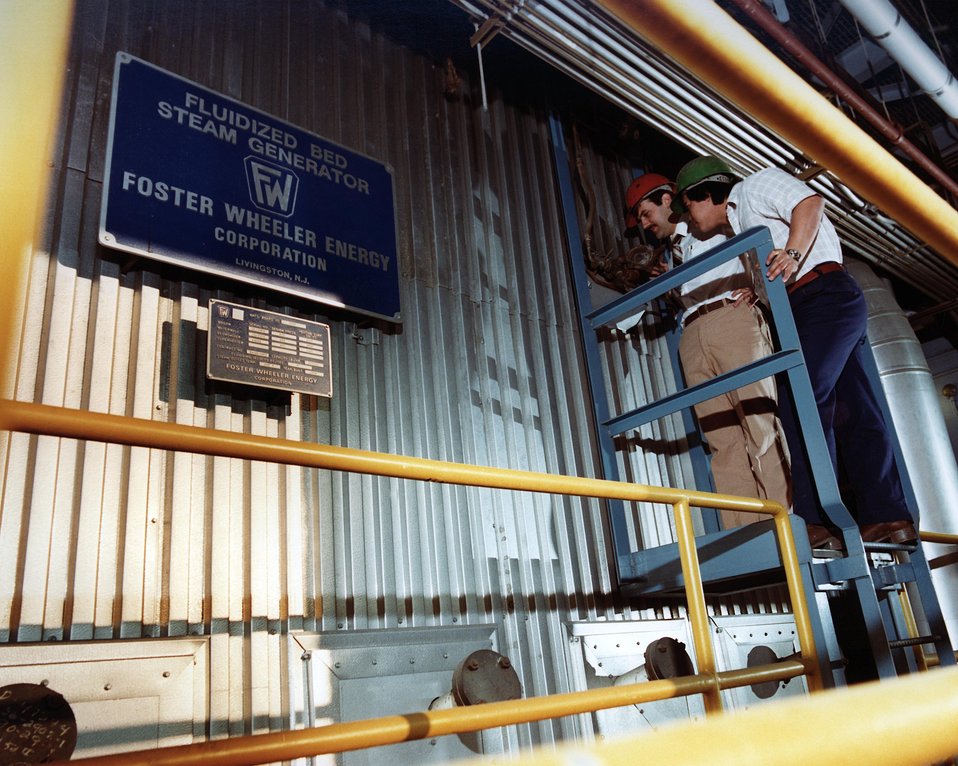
SOUTH END OF THE BOILER.

OBJECTIVES OF THE GREAT LAKES AFB STEAM BOILER PROJECT ARE THE DESIGN, CONSTRUCTION, TESTING, AND OPERATION OF A PRO- TO TYPE BOILER TO ESTABLISH THE PRACTICALITY OF BURNING HIGH-SULFUR COAL AND THE COMPILATION OF SUFFICIENT DATA FROM PROTOTYPE OPERATIONS TO ENABLE THE INDUSTRY TO DESIGN AND OPERATE FULL-SIZE UNITS IN INDUSTRIAL PLANTS. THE GREAT LAKES PROJECT IS USING A 50,000 LB/HR SUPERHEATED STEAM BOILER WITH A COAL RATE OF 2.5 TONS/HR.